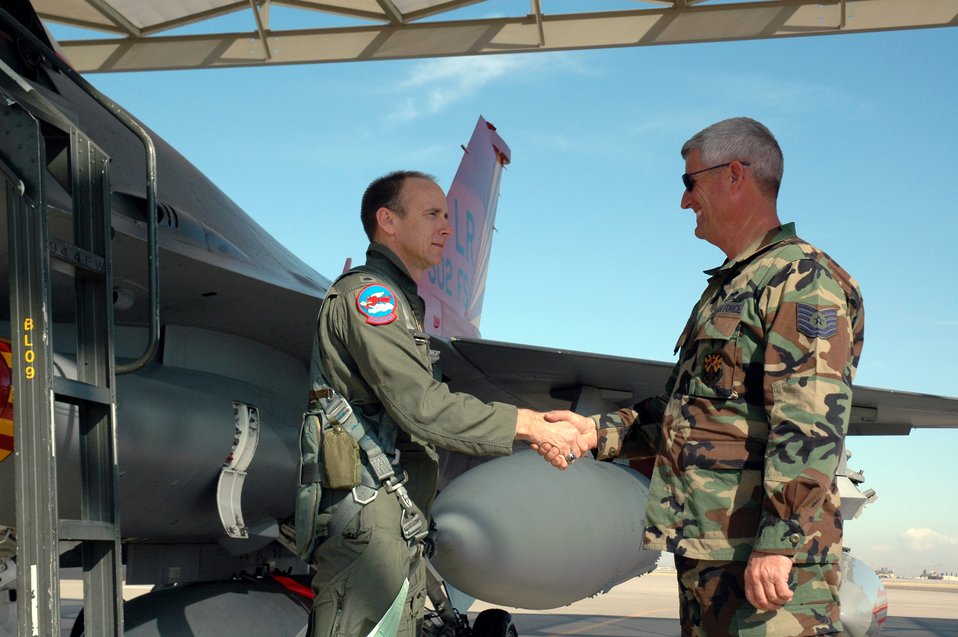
Reserve wing closes chapter in history

Lt. Col. Donald Lindberg shakes the hand of his crew chief, Tech. Sgt. Dan Dennison, Feb. 12 before taking his final flight in a 944th Fighter Wing F-16 Fighting Falcon. The last three F-16s assigned to the wing departed Luke Air Force Base, Ariz., as part of Base Realignment and Closure Commission actions. Colonel Lindberg is the 302nd Fighter Squadron commander.